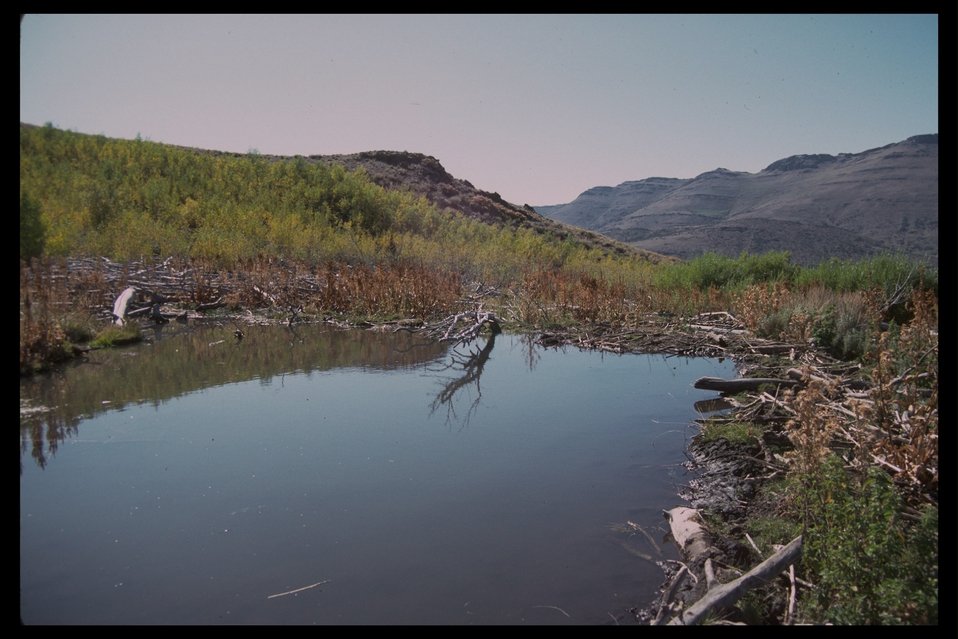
Large beaver pond in Beaver Creek. (Pueblo Mountain, WSA 2-81)